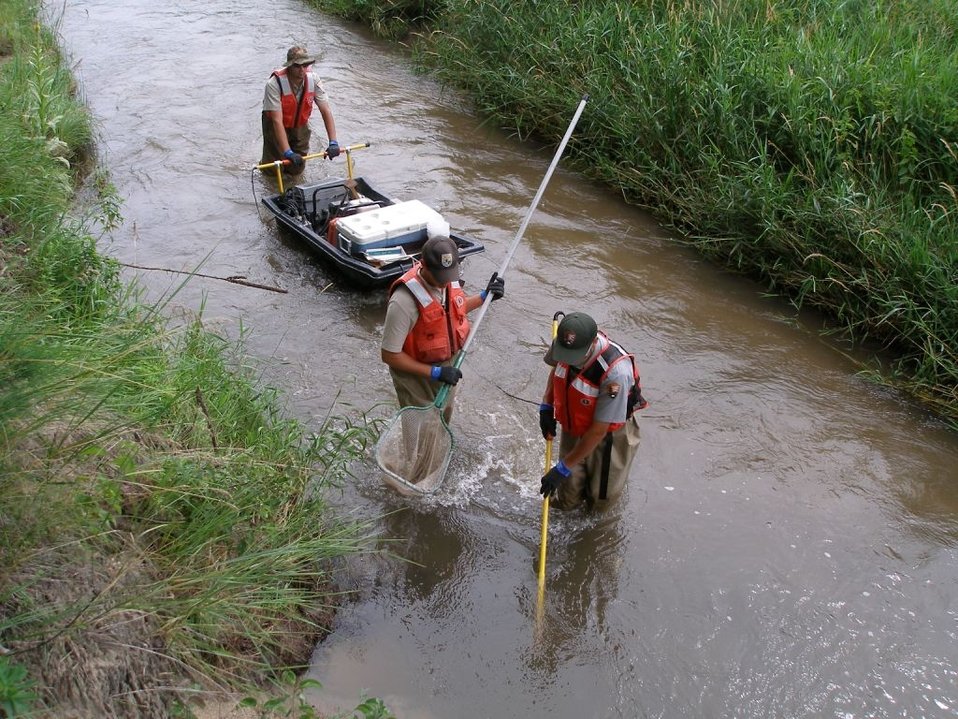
Fish population monitoring data are essential to protecting and managing native fish species in the Great Plains. The Great Plains Fish and Wildlife Conservation Office in South Dakota with the National Park Service, completed two towbarge electrofishing surveys of Verdigre Creek.